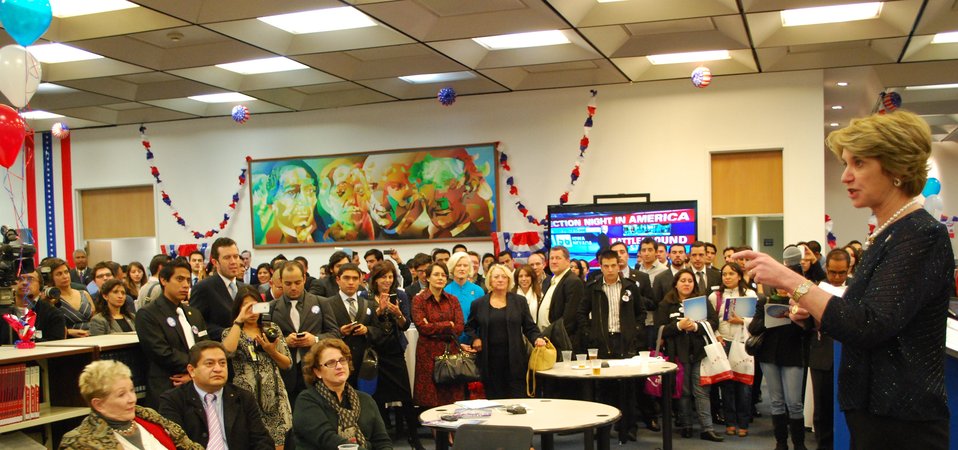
Former Maryland Lieutenant Governor and Special Advisor Kennedy Townsend Addresses Students

Kathleen Kennedy Townsend, former Maryland Lieutenant Governor and Special Advisor for “100,000 Strong in the Americas,' speaks to undergraduate students and professors representing 21 local colleges and universities at an event hosted by the U.S. Embassy in Mexico City, Mexico and the Benjamin Franklin Library on the evening of the 2012 U.S. elections, November 6, 2012. The event celebrated democracy and education.